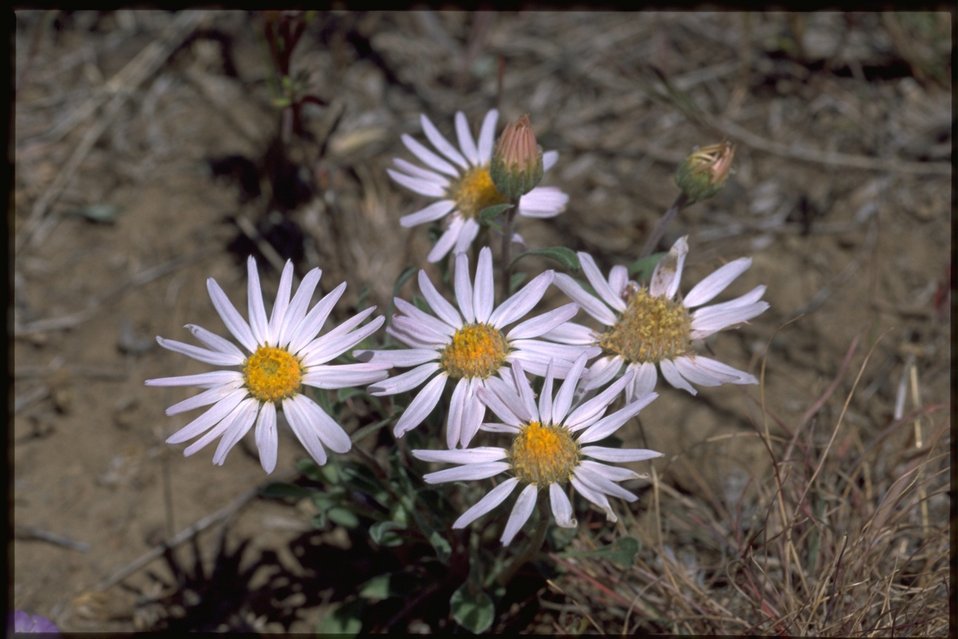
Medium shot of Asteraceae.